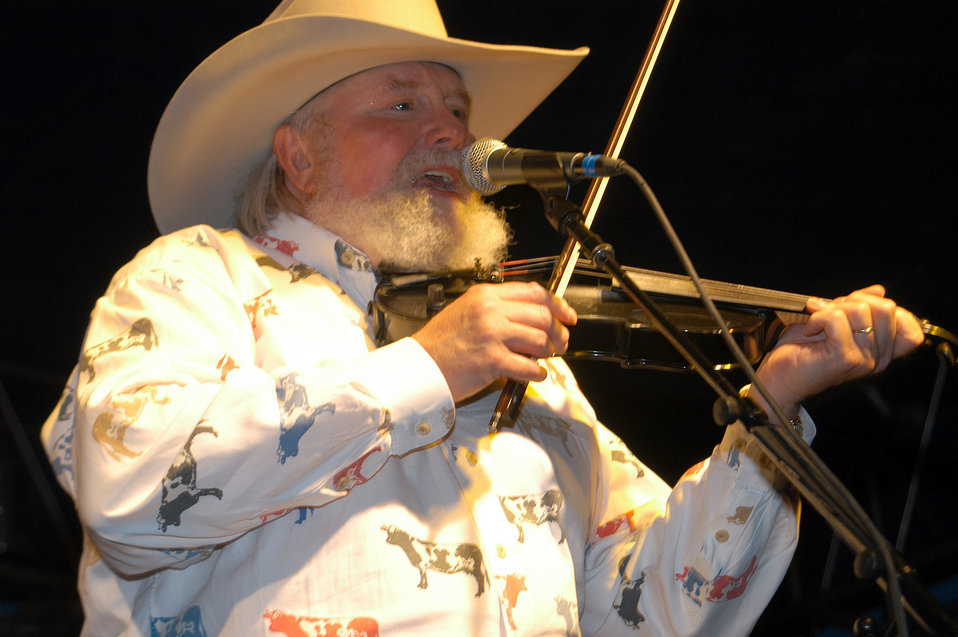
Daniels went down to Dyess

DYESS AIR FORCE BASE, Texas -- Country music artist Charlie Daniels performs his 1979 hit song,